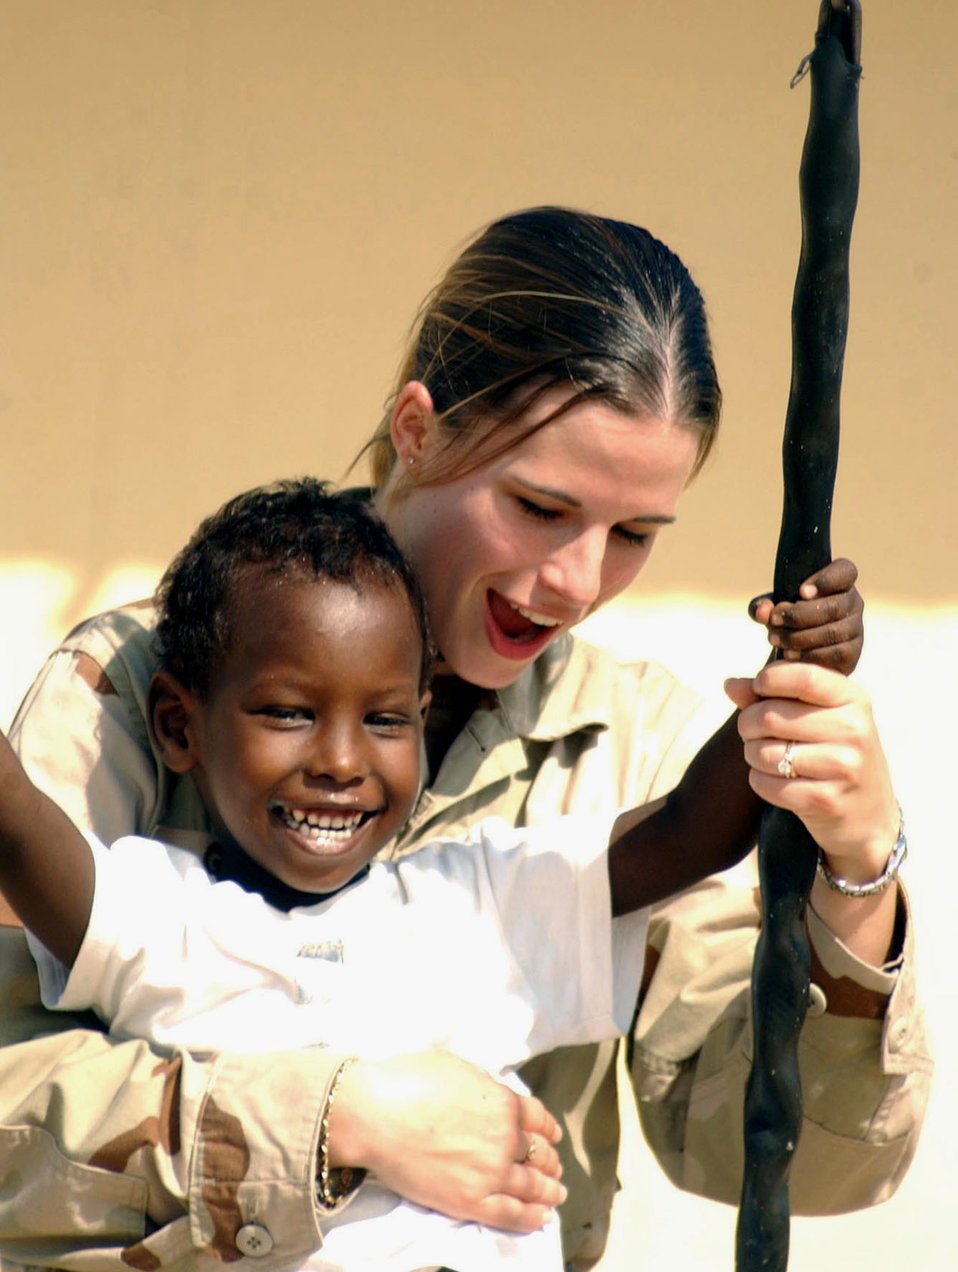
Smiles all around

DJIBOUTI CITY, Djibouti -- Senior Airman Jamie Grampp spends some time with a child at an orphanage in Djibouti City, Djibouti. Grampp is a finance clerk with Combined Joint Task Force-Horn of Africa. She is deployed from the 436th Comptroller Squadron at Dover Air Force Base, Del.